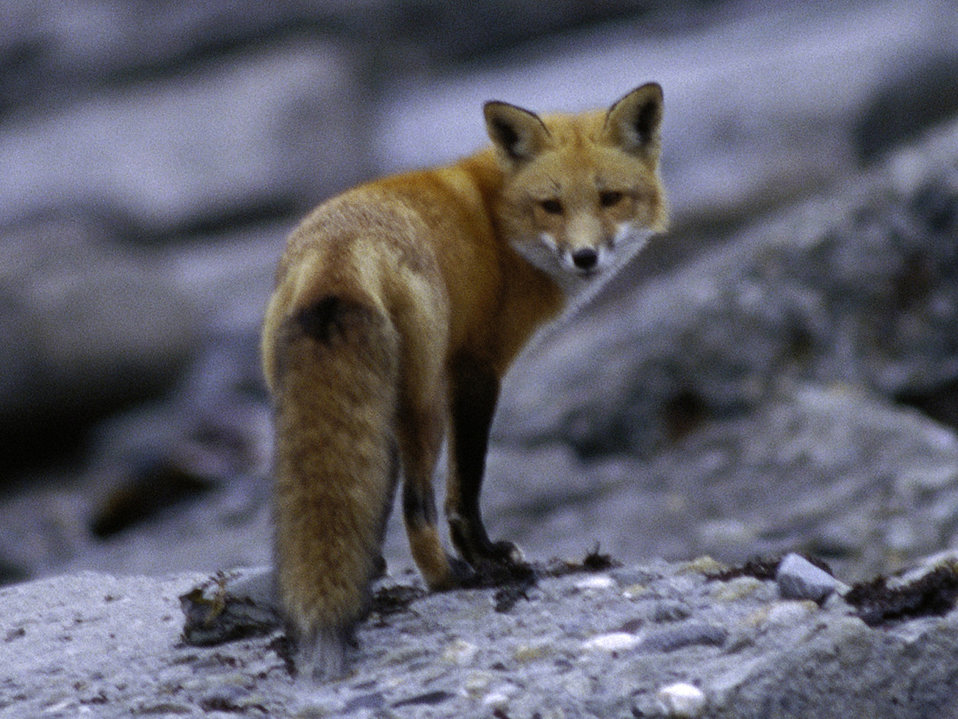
Photo of the Week - Red Fox at Sachuest Point National Wildlife Refuge

Photo of the Week - 1/26/10

Red fox at Sachuest Point National Wildlife Refuge in Rhode Island.